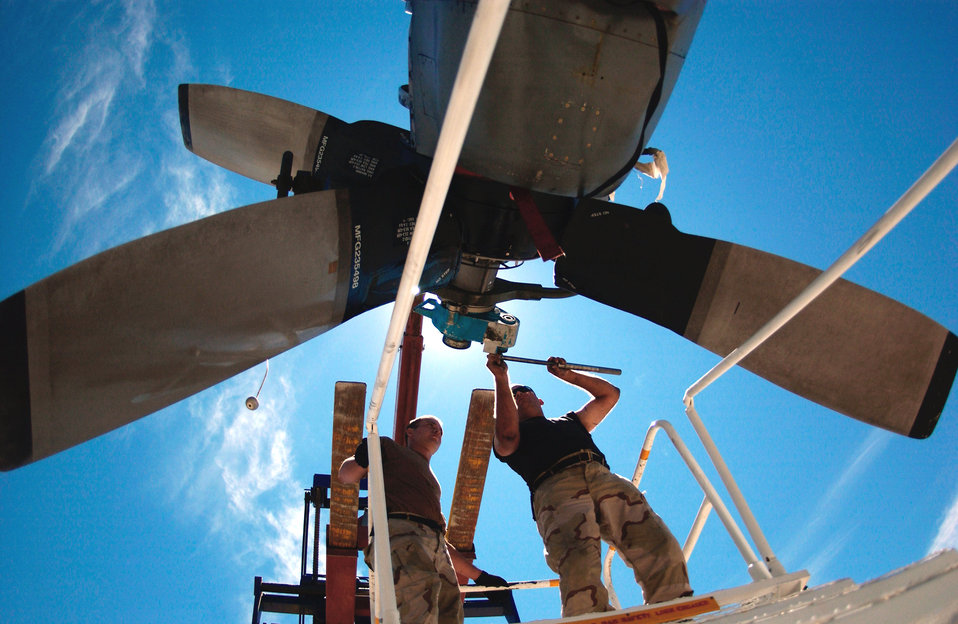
Prop job

NAVAL AIR STATION FALLON, Nev. -- Maintainers from the 347th Aircraft Maintenance Squadron, Moody Air Force Base, Ga., detach a propeller from an HC-130P. The 347th AMS is participating in Desert Rescue XI. The joint-service combat search and rescue training exercise simulates downed aircrew behind enemy lines and allows airmen to practice rescue-related missions.